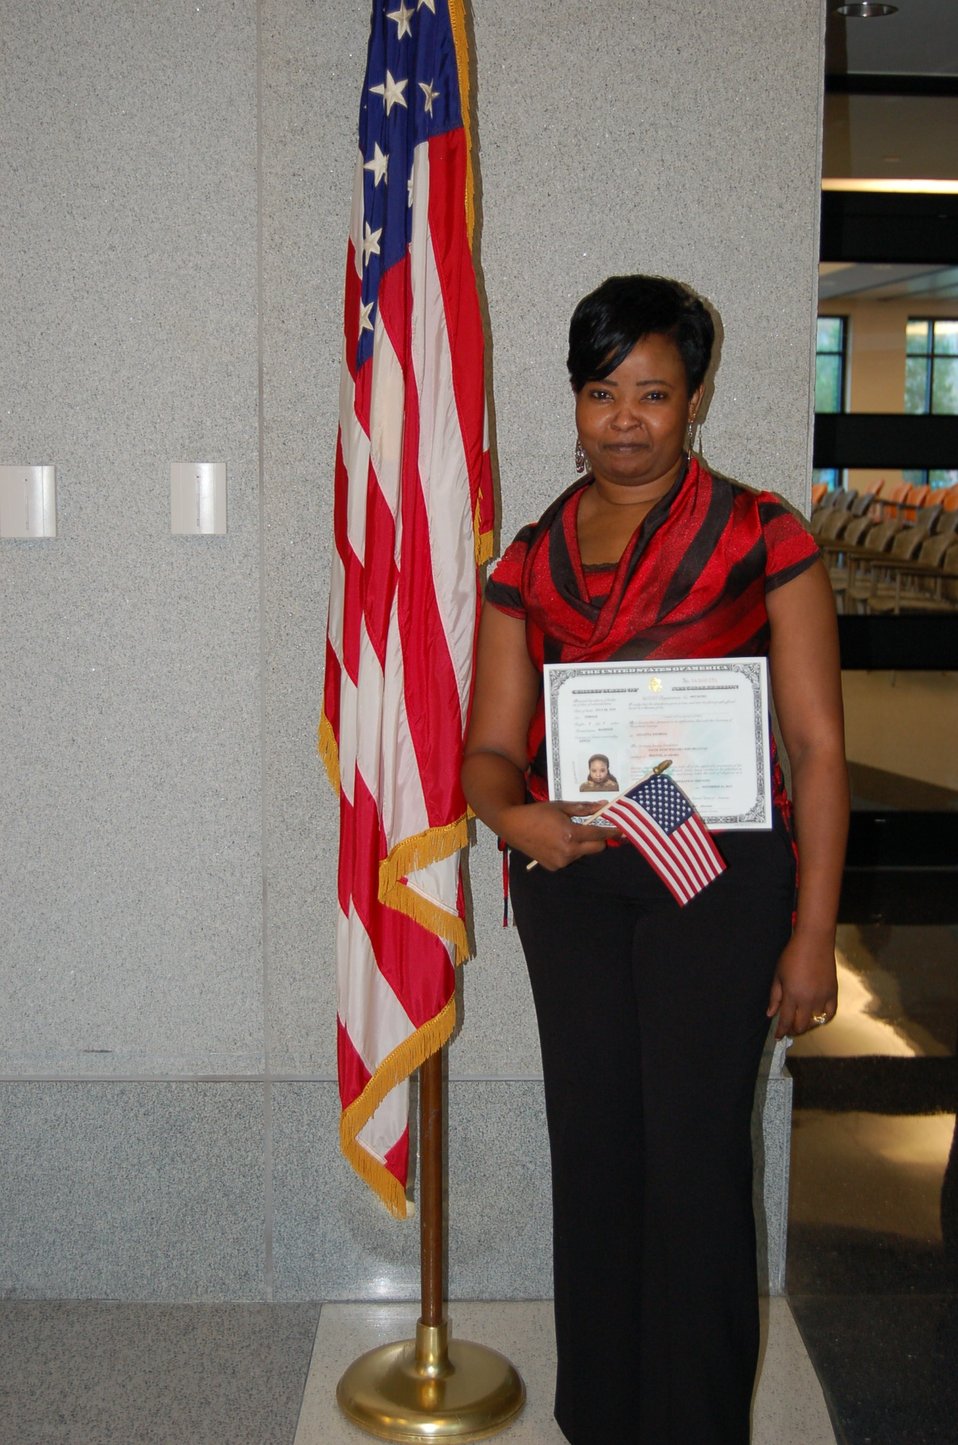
New Citizens